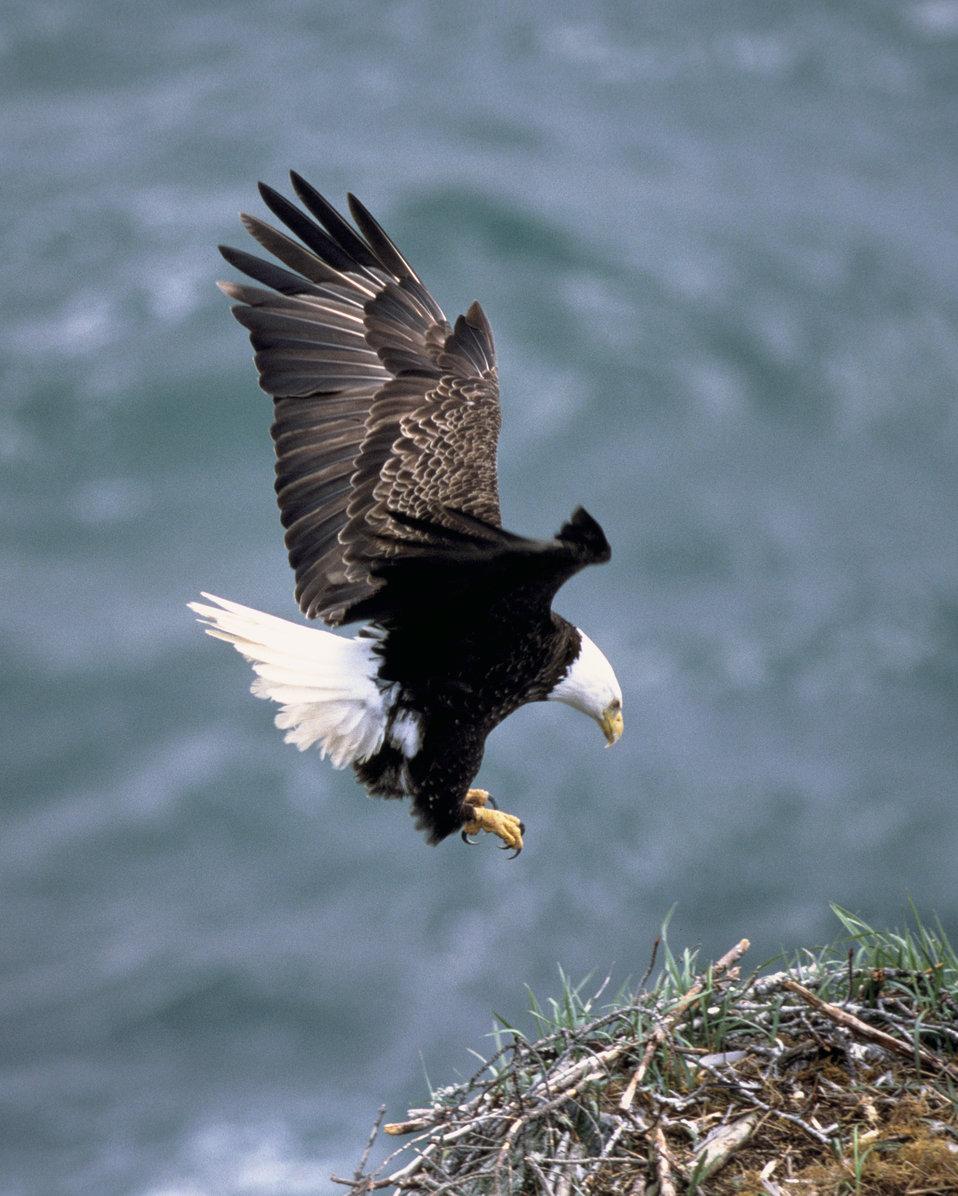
A bald eagle in flight

A bald eagle draws wings back as it comes into the nest for a landing. Bald eagles generally lay 2 to 3 eggs in a large nest made of sticks and smaller twigs in tall trees or on rocky cliffs.